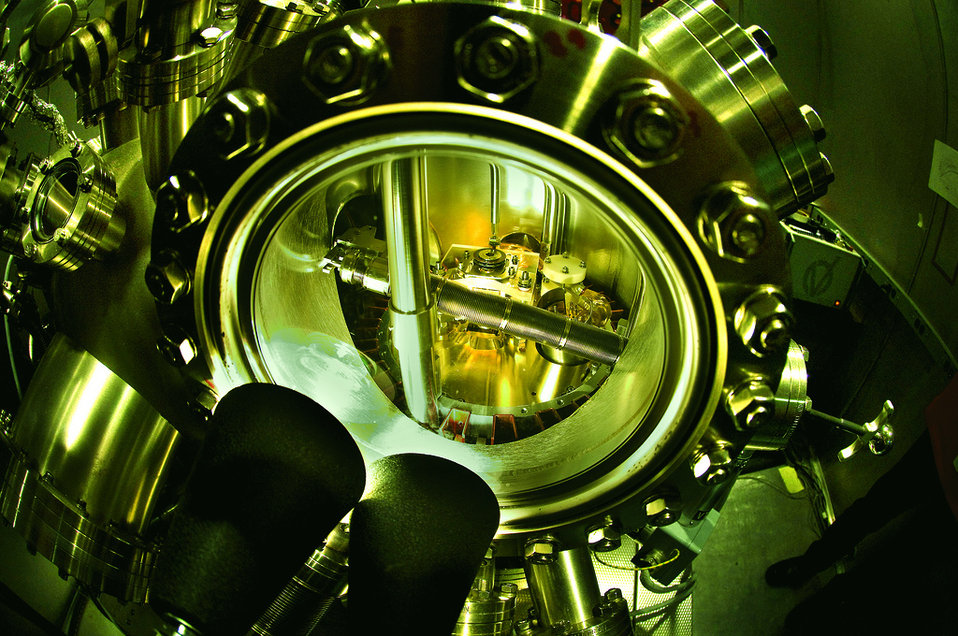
Brookhaven Lab researchers use scanning tunnel microscopy to study catalytic activity.